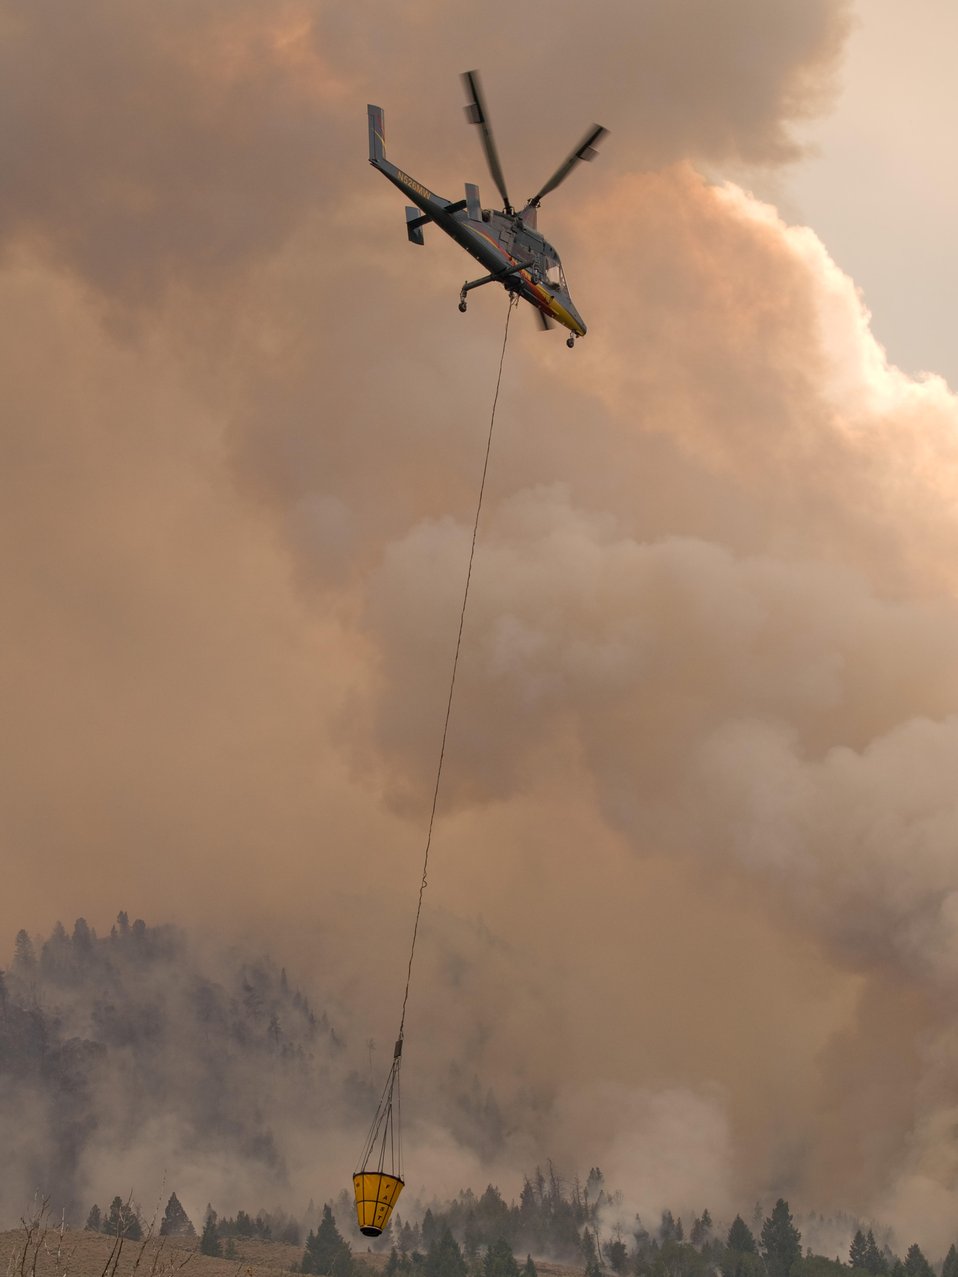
K-Max helicopter works on the Lodgepole Fire. The Lodgepole Fire in the Salmon-Challis National Forest near Challis, ID began on Jul. 20, 2013 by lightning has consumed approximately 13,700 acres and is approximately 15% contained.